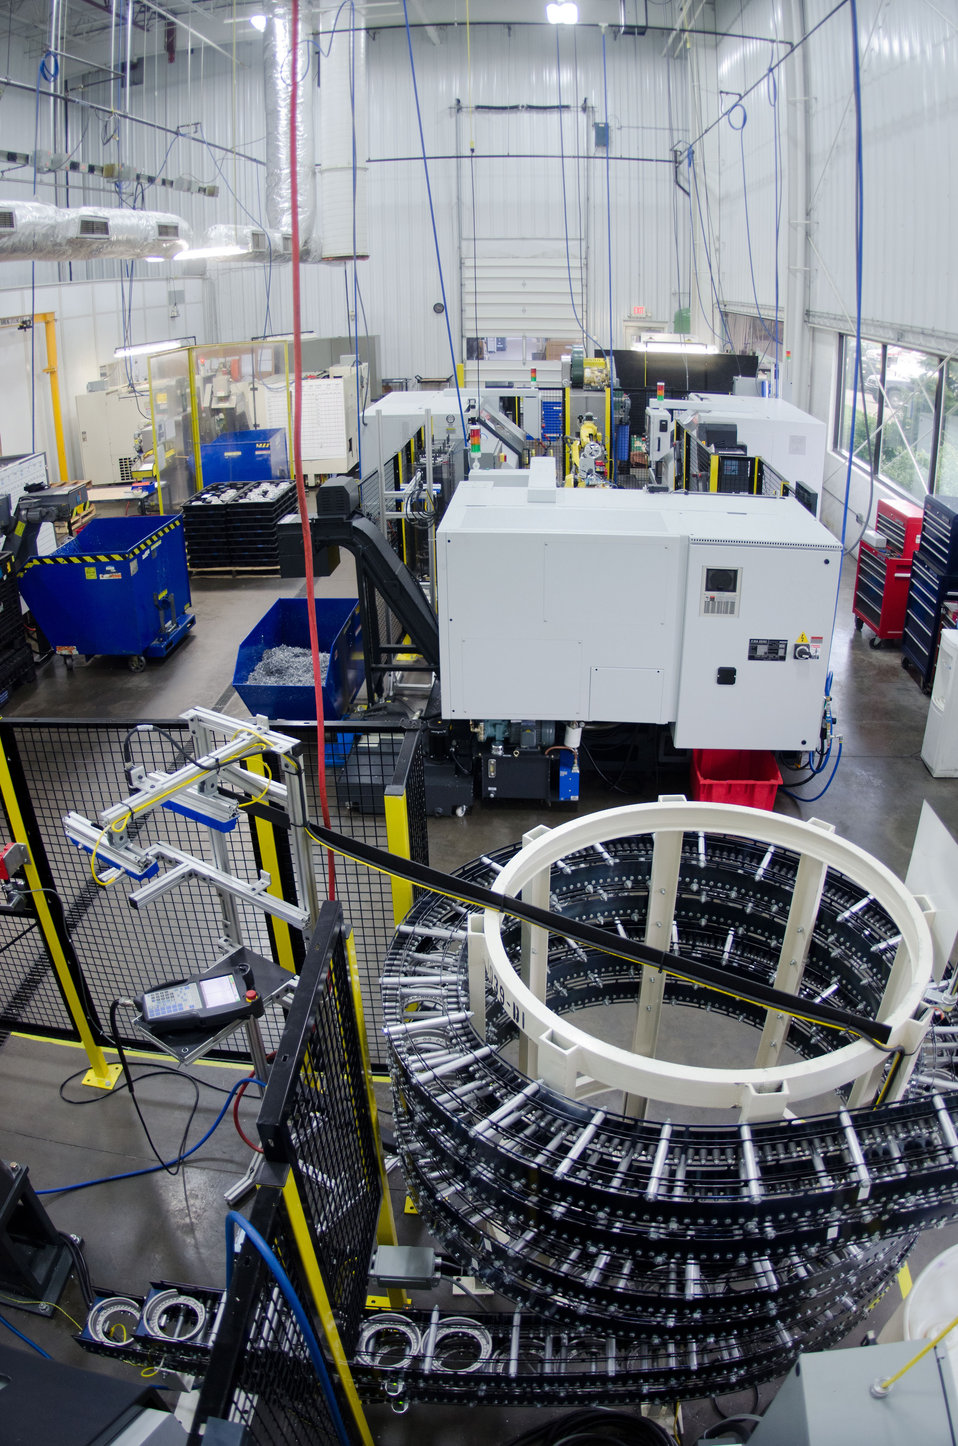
Automated precision robotic machining facility at Port City Group’s Port City Castings Corporation manufactures high-pressure aluminum die-castings, mostly for the automotive industry, in Muskegon, MI, facility on Wednesday July 20, 2011. Port City Group boosted its employment by 12 percent over last year thanks to two Rural Business Guaranteed Loans totaling $9.6 million. In its 80,000 sq. ft. facility, machines that range from 800 – 1,600 tons, and cast A380 aluminum alloy products from melted ingots of aluminum, into automotive components of U.S.A. made vehicles. The process features a variety of robotic presses; computer controlled machining; quality control facility; and complete measurement and testing laboratory. In 2009 banks were backing out of loans for PCG equipment purchase agreements. The U.S. Department of Agriculture (USDA) loan guarantee helped make the loan possible with its guarantee. PCG obtained the needed robotic and other equipment. This resulted in a stable workforce that has since grown. When asked about their USDA experience, Port City Group Sales Manager Laura LaGuire said, “It was great! They were very helpful. Everything that came up was handled smoothly, the money came in place when it was needed, and it was a very smooth transition.”